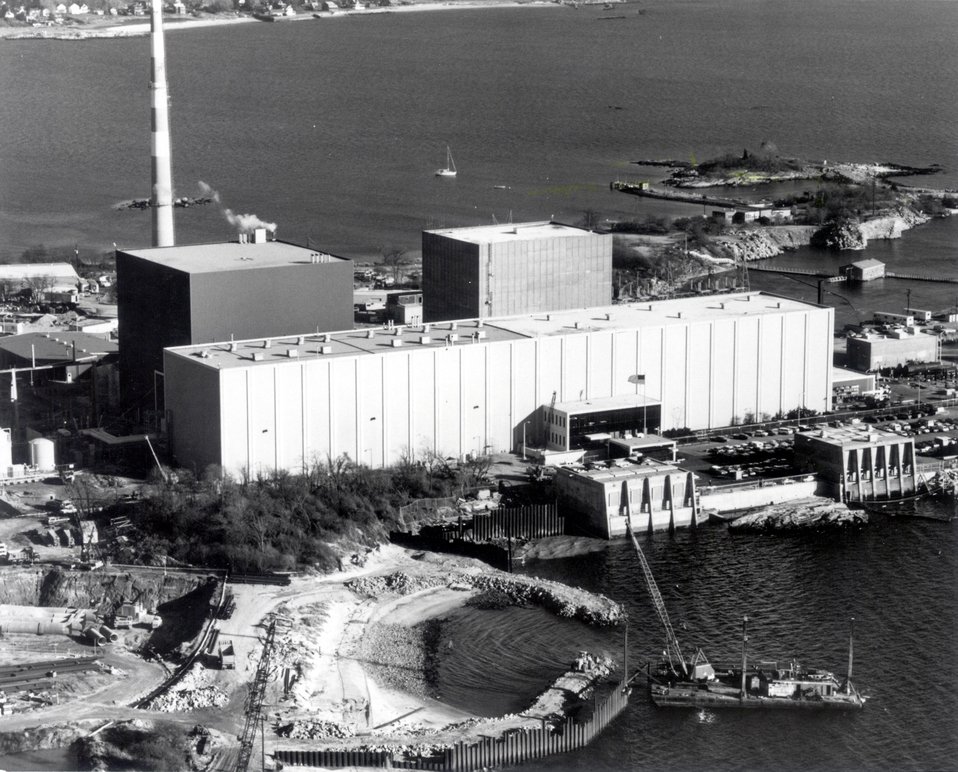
Windsor, Conn...The Power Systems Group of Combustion Engineering, Inc. today announced that Unit 2 at the Millstone Nuclear Power Station, Waterford Conn. has entered commercial service for Northwest Utilities.